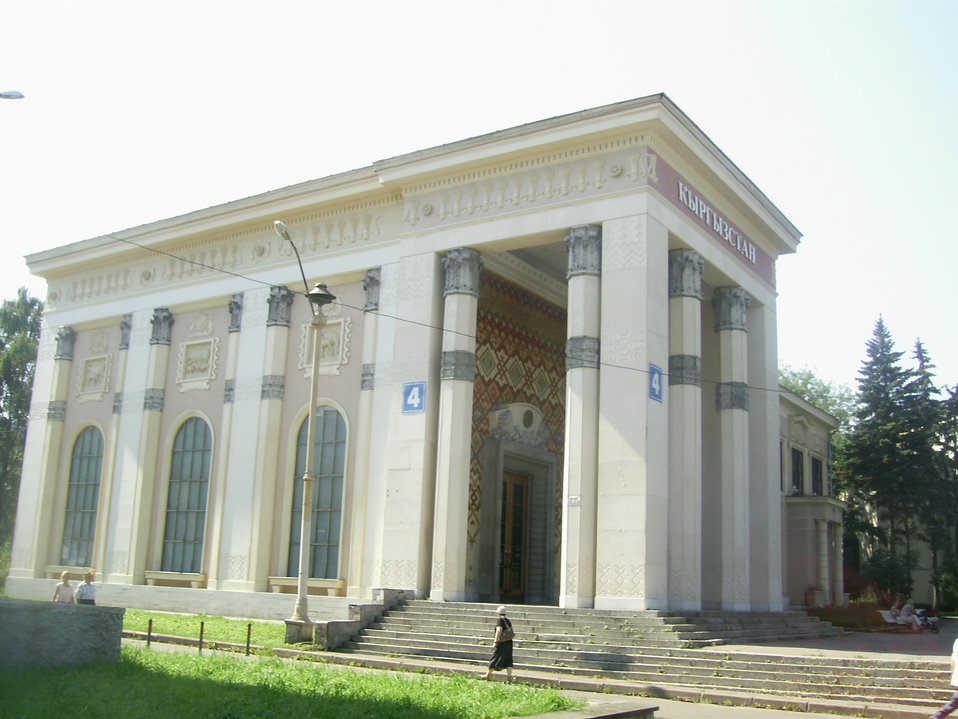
Русский: Построен к 1954 году как павильон «Эстонская ССР» . Архитекторы — Х.А. Арман, А.Х. Вольберг, Н.К. Тарвас. Главный художник павильона П.Э. Аавик. С 1963 года «Биология». Но в 2009 году в павильоне состоялось открытие выставочно-коммерческого центра Кыргызской Республики. Français†: Construit en 1954 en tant que pavillon de la RSS d'Estonie par Arman, Wohlberg, Tarvas. Devenu pavillon de la Biologie en 1963. En 2009, il est devenu salle d'exposition des produits commerciaux de la république du Kirghizistan.